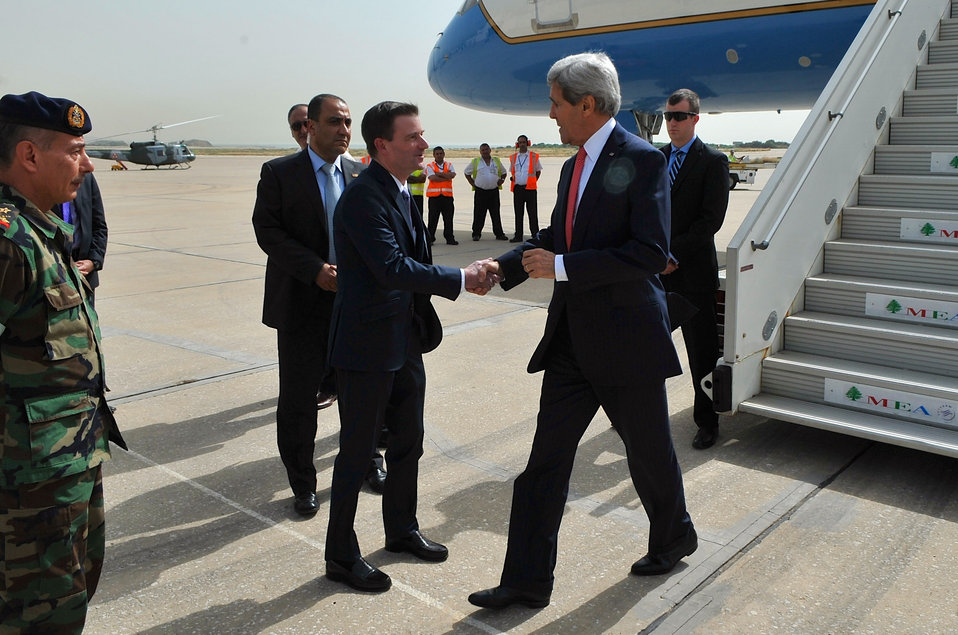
Secretary Kerry is Greeted by Ambassador Hale Upon Arrival to Beirut

U.S. Secretary of State John Kerry is greeted by U.S. Ambassador to Lebanon David Hale upon arrival to Beirut, Lebanon, on June 4, 2014.